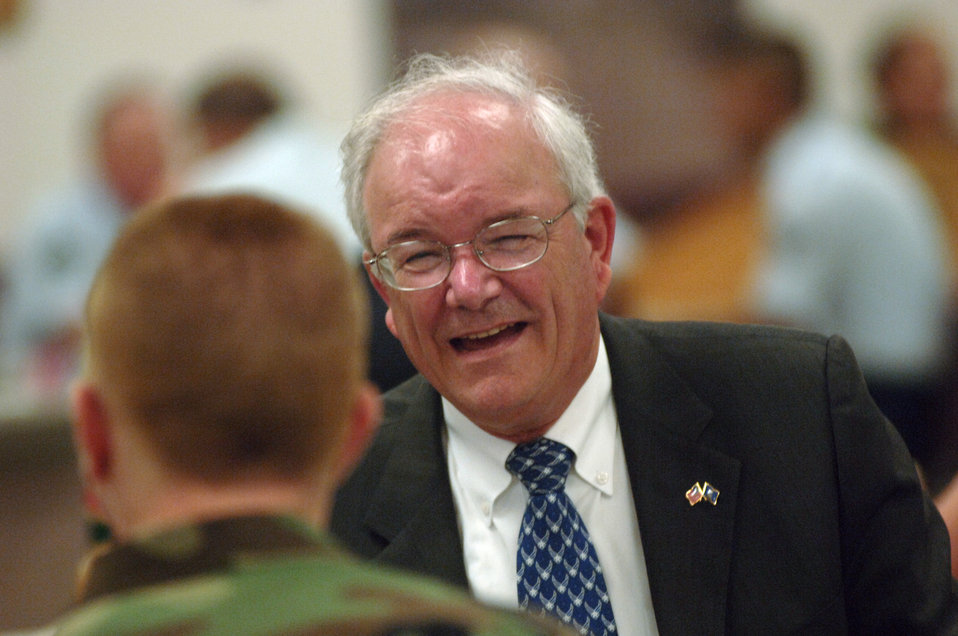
Secretary Wynne expects Airmen to continue to excel

Secretary of the Air Force Michael W. Wynne talks to Airman Basic Bradley Cline at lunch at Lackland Air Force Base, Texas, on Friday, June 2, 2006. Secretary Wynne was in San Antonio visiting various military installations and training sites. Airman Cline is assigned to the 326th Training Squadron.